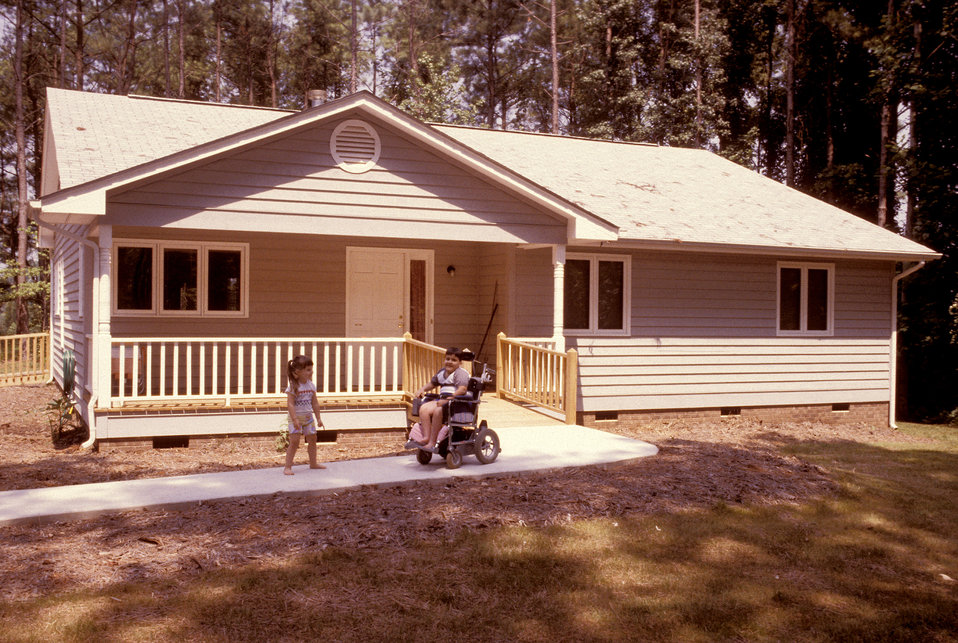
This is one of six images, (PHIL# 9155 - 9160), depicting the exterior of a small, wood frame, clapboard, single story house with a smooth, concrete pathway to the front porch. The porch was roofed, and was level with the first floor of the house. The pathway to the front door crossed a small, railed bridge in order to establish and maintain the proper drainage swale along the front of the house. In this image, a young wheelchair-seated boy and his sister were posed on this path. A retaining wall supported the earth berm upon which the pathway sat. The projection of a small ramp could be seen, on the left, at the rear of the house. The front door has a full-height sidelight window. This type of stepless, universal entrance avoided the construction, slopes, and maintenance issues of ramped entrances, thereby, avoiding the unattractive and stigmatizing appearance of most ramps.